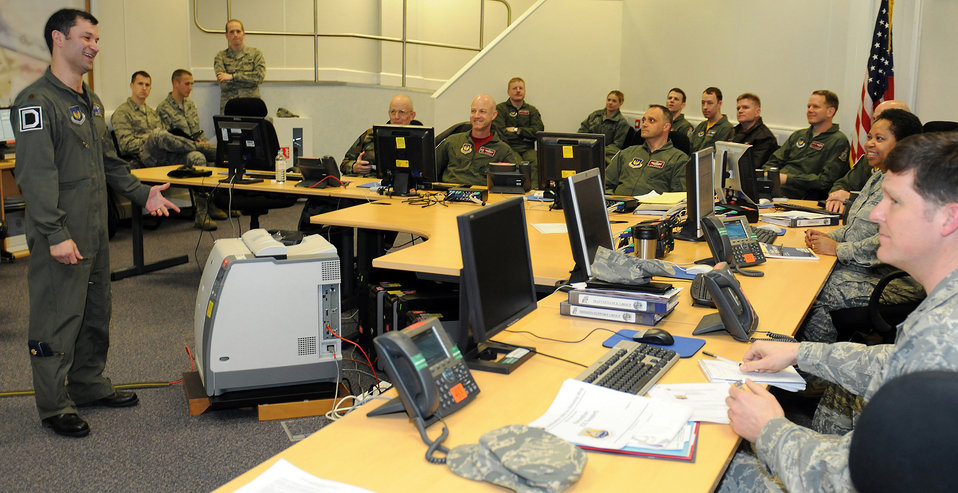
Joint Task Force Odyssey Dawn

110318-F-DE018-003 -- RAF MILDENHALL, England (March 18, 2011) -- Leadership from the 100th Air Refueling Wing are briefed in the Installation Command Center on current operations supporting Joint Task Force Odyssey Dawn. JTF Odyssey Dawn is the U.S. Africa Command task force established to provide operational and tactical command and control of U.S. military forces supporting the international response to the unrest in Libya and enforcement of United Nations Security Council Resolution (UNSCR) 1973. UNSCR 1973 authorizes